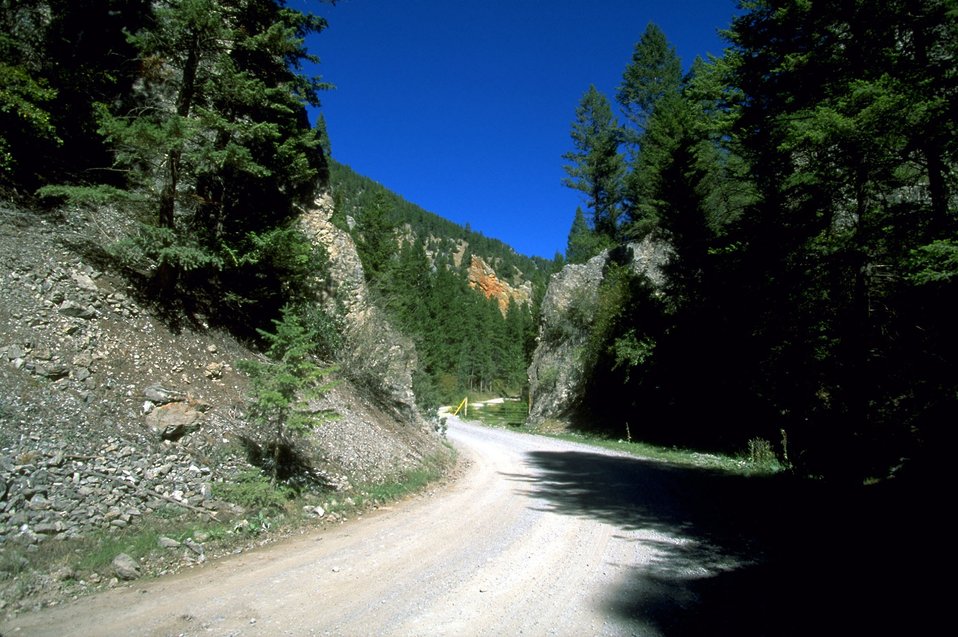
Rattler Gulch-Limestone Cliffs ACEC (area of critical environmental concern)